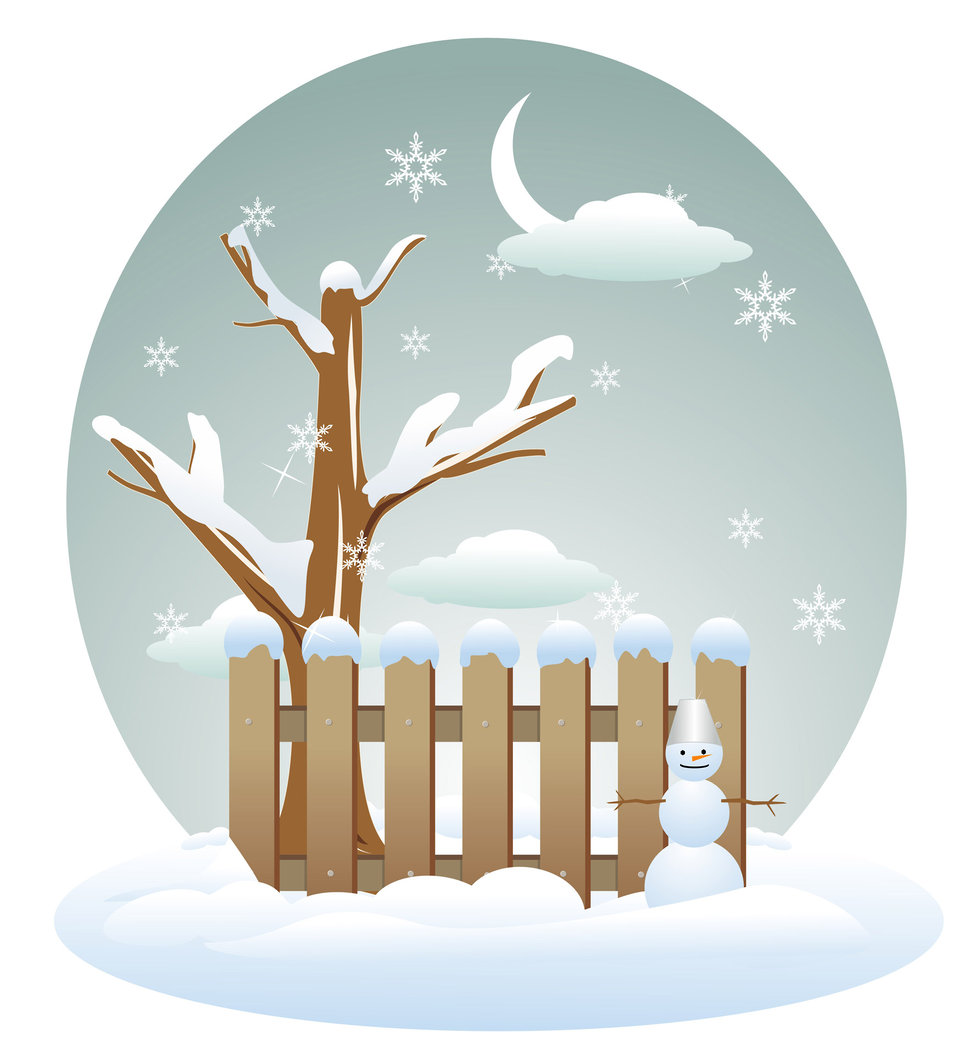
Vector background

Abstract vector background "seasons".